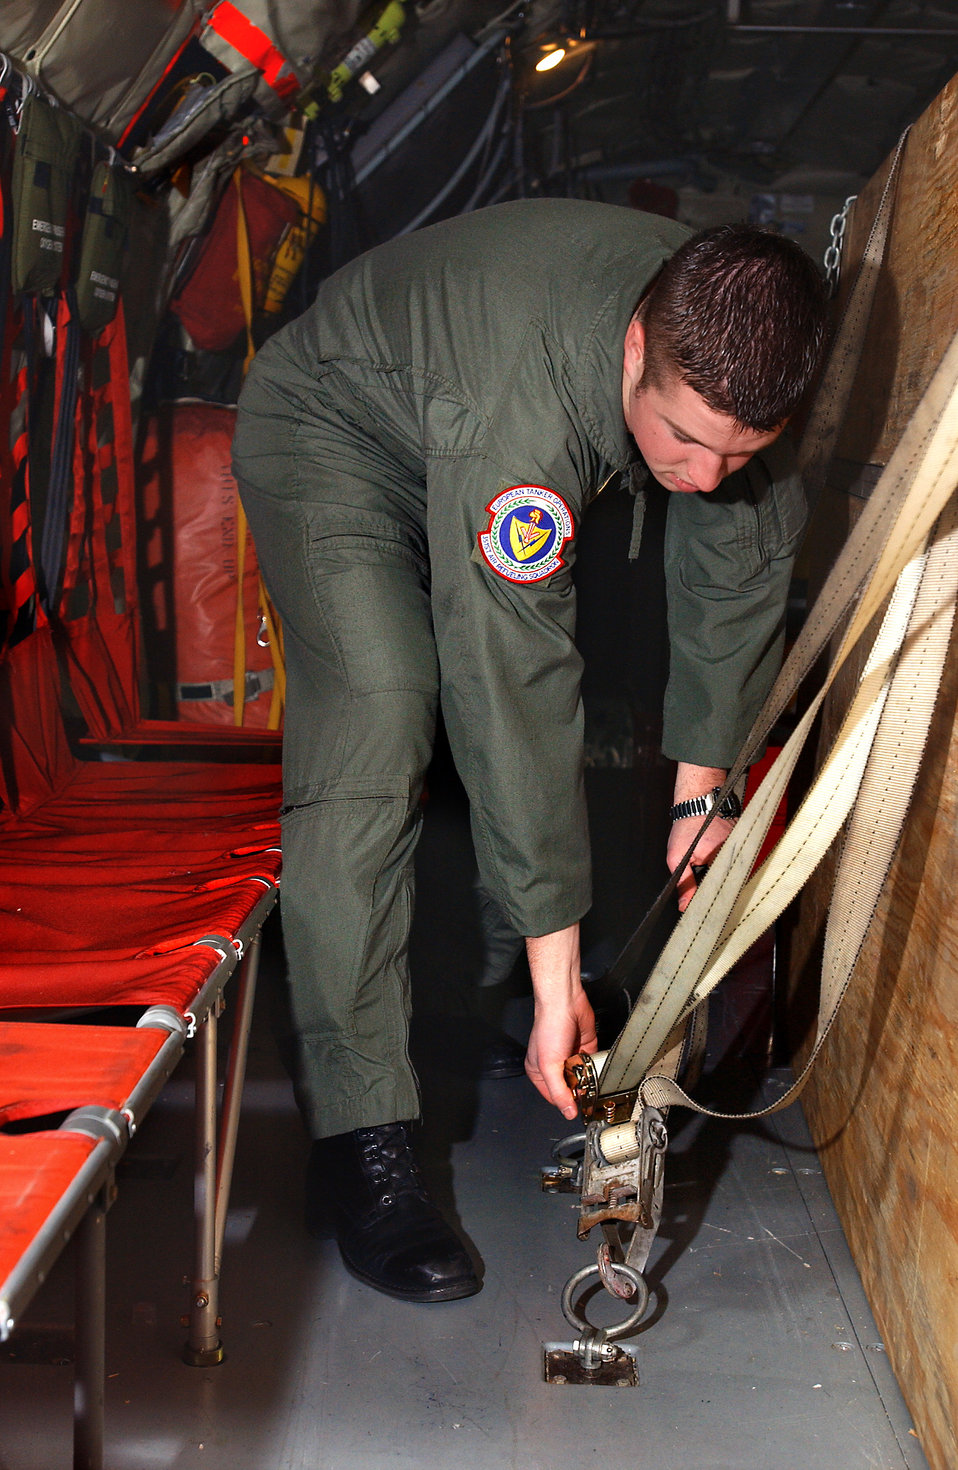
Getting ready

ROYAL AIR FORCE FAIRFORD, England -- Senior Airman Jonathan Groleau inspects a KC-135 Stratotanker and tightens down a strap prior to a six-and-a-half-hour-long mission here April 22. Airman Groleau is a boom operator with the 351st Air Refueling Squadron at Royal Air Force Mildenhall, England.